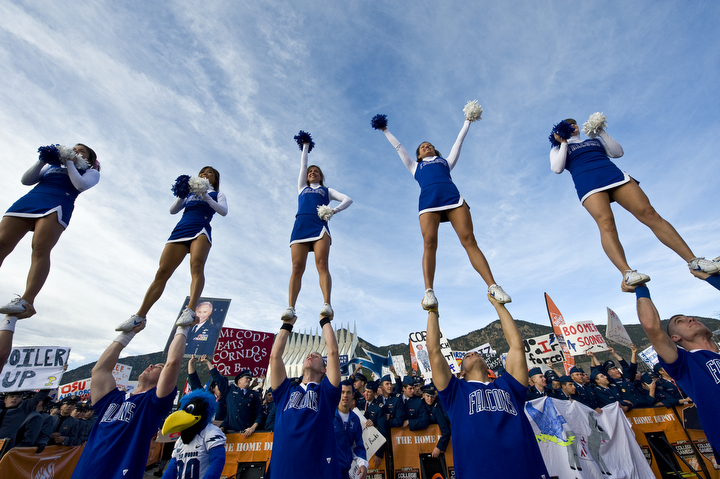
ESPN films 'College GameDay' from Academy

U.S. Air Force Academy cheerleaders perform at the Terrazzo during ESPN's